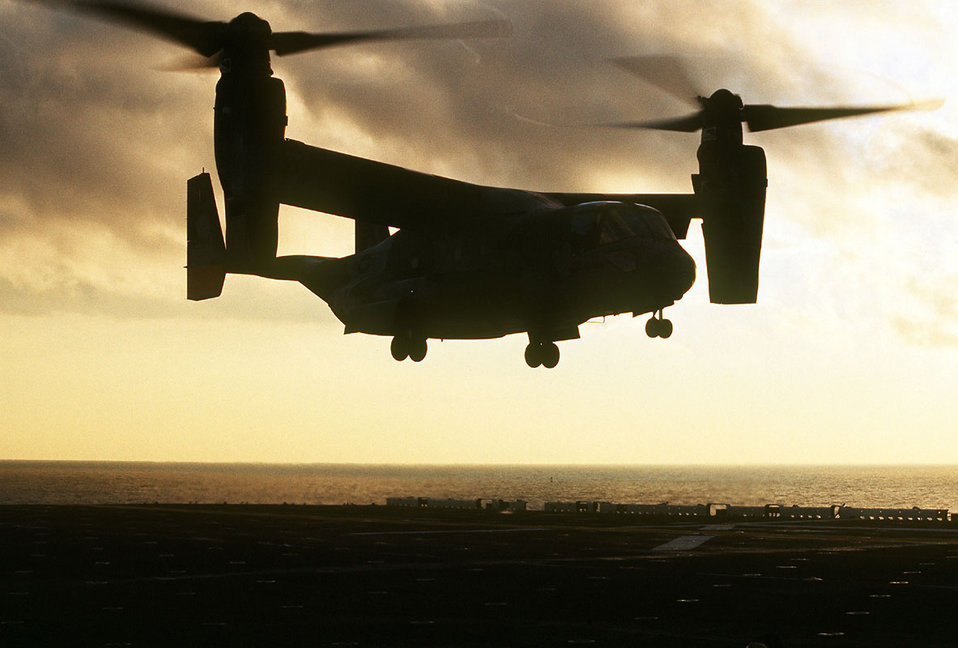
Osprey goes vertical

FILE PHOTO -- It will be awhile before Air Force Special Operations Command gets its first CV-22 Osprey, but that hasn't lowered the command's enthusiasm for the aircraft. The eagerness to get the plane isn't just because the CV-22 will replace up to 89 aircraft currently in AFSOC's inventory. Neither is it just because the CV-22 can take off and land like a helicopter and fly like a turboprop airplane. AFSOC -- which has headquarters at Hurlburt Field, Fla. -- is confident in the belief that the CV-22 will enable the command to do what it can't do now. That is, conduct long-range, high-speed, vertical lift missions in an aircraft capable of getting troops into and out of an area in one night. Almost futuristic in its design, the CV-22 looks like a helicopter on the ground with two sets of propeller rotors on each wing tip. Once airborne, the rotors tilt forward so the aircraft resembles a dragon fly with turboprops.